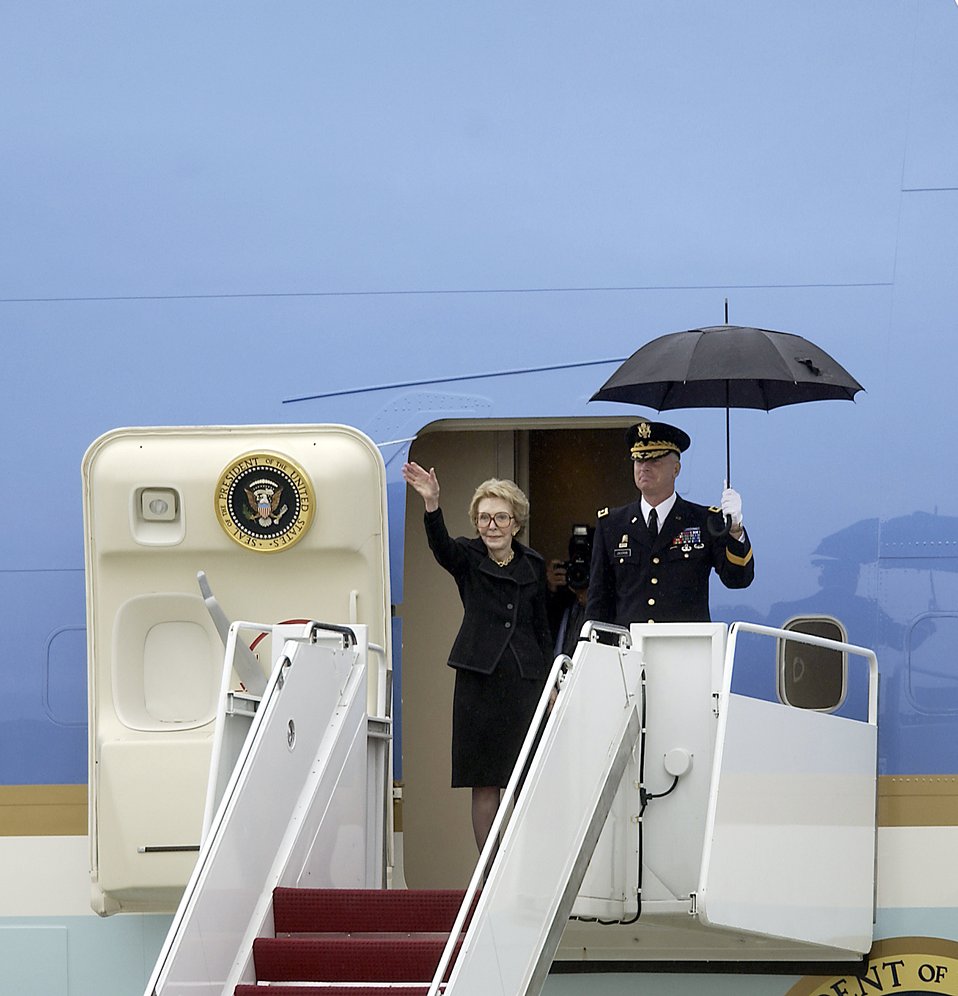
Farewell Mr. President

ANDREWS AIR FORCE BASE, Md. -- Nancy Reagan waves to guests from a VC-25 on the ramp here June 11 after former President Ronald Reagan's state funeral service at the National Cathedral in Washington. President Reagan was flown to the nation's Capitol on June 9 following his death June 5. President Reagan's remains were flown to Simi Valley, Calif., for a private sunset burial.